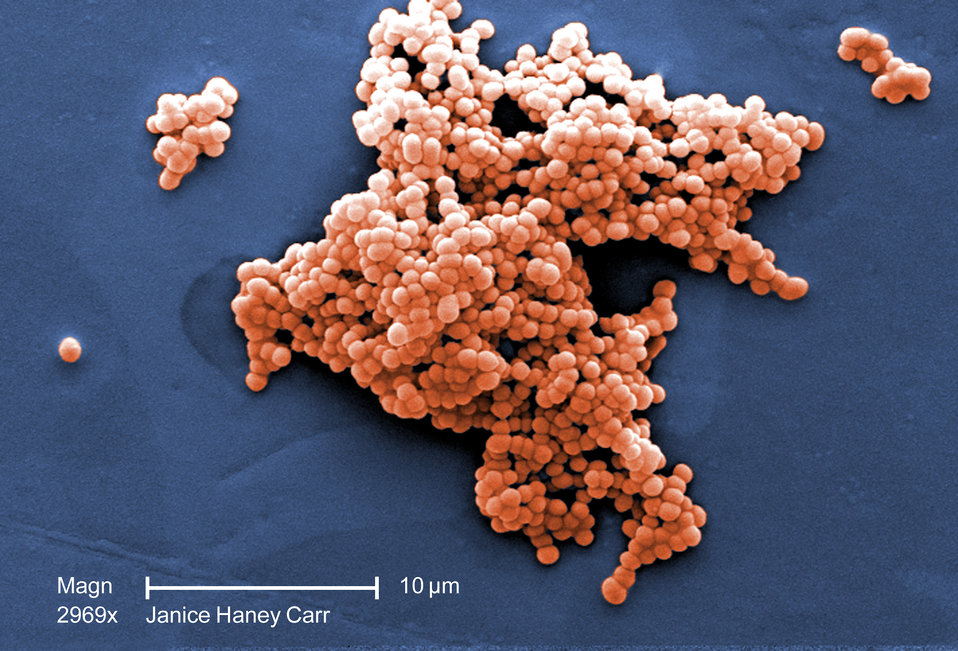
Under a moderate magnification of 2,969X, this scanning electron micrograph (SEM) revealed a number of clusters of Gram-positive, beta-hemolytic Group C Streptococcus sp. bacteria. See PHIL 10590 for a black and white version of this image.